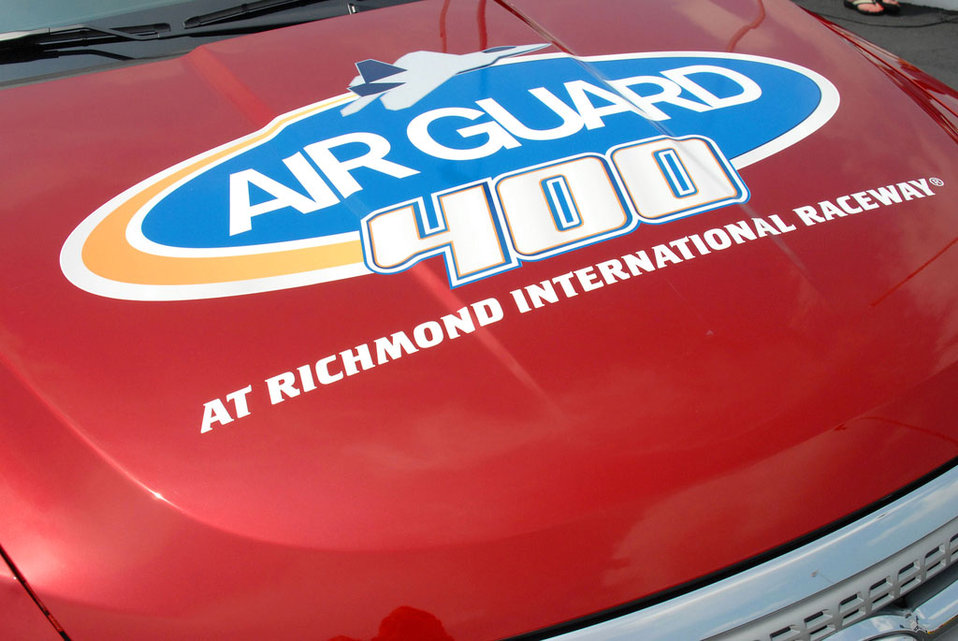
Richmond track officials announce plans for 'Air Guard 400'

The official pace car was unveiled for the Air Guard 400, which will be held Sept. 11, 2010, at the Richmond International Raceway in Richmond, Va. The announcement of the race's new sponsor was made at the track after a skydiving stunt by Master Sgt. Matt Leas and Doug Fritz, the track president, Aug. 4, 2010.